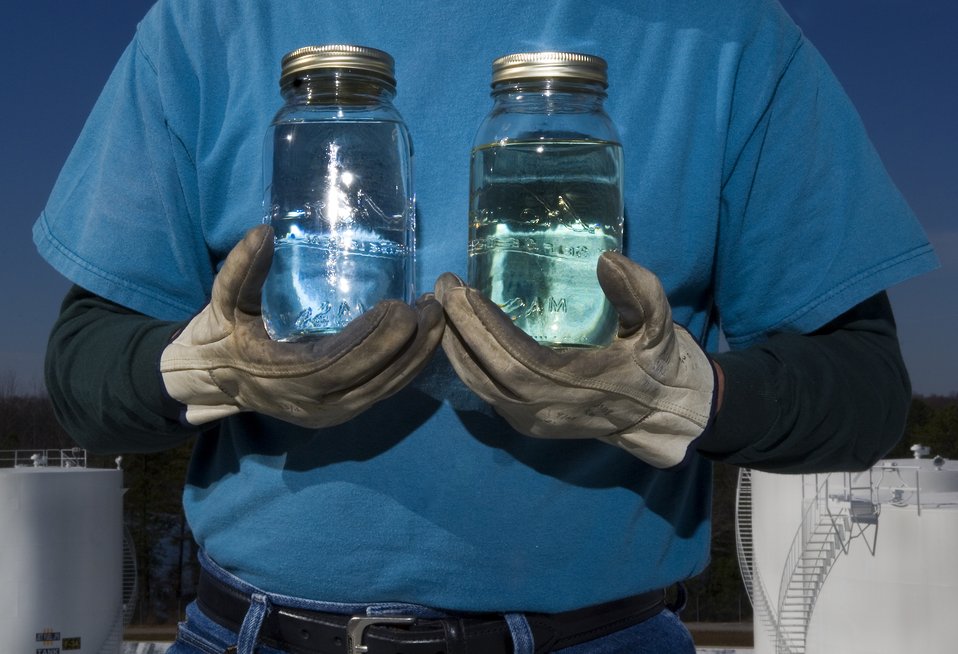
Lieutenant's oversight mission vital to Air Force testing

Retired Master Sgt. James Lucas compares jars of Fischer-Tropsch produced synthetic fuel (left) and JP-8 jet fuel Dec. 4 at Arnold Air Force Base, Tenn., The Air Force is testing an alternative fuel source using a 50/50 mix of the two fuels to help reduce U.S. dependancy on foreign oil. Mr. Lucas is a contracted outside machinist for the Arnold Engineering Development Center.